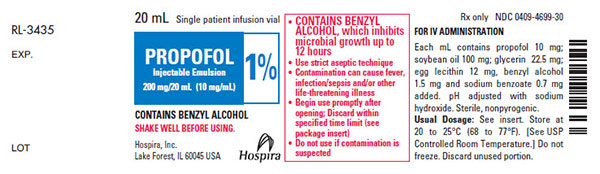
RECALLED - Propofol Injectable Emulsion, USP

April 17, 2014 – Product Recall – Hospira Announces Nationwide Voluntary Recall of Seven Lots of Propofol Injectable Emulsion, Usp, Due to Visible Particulates.